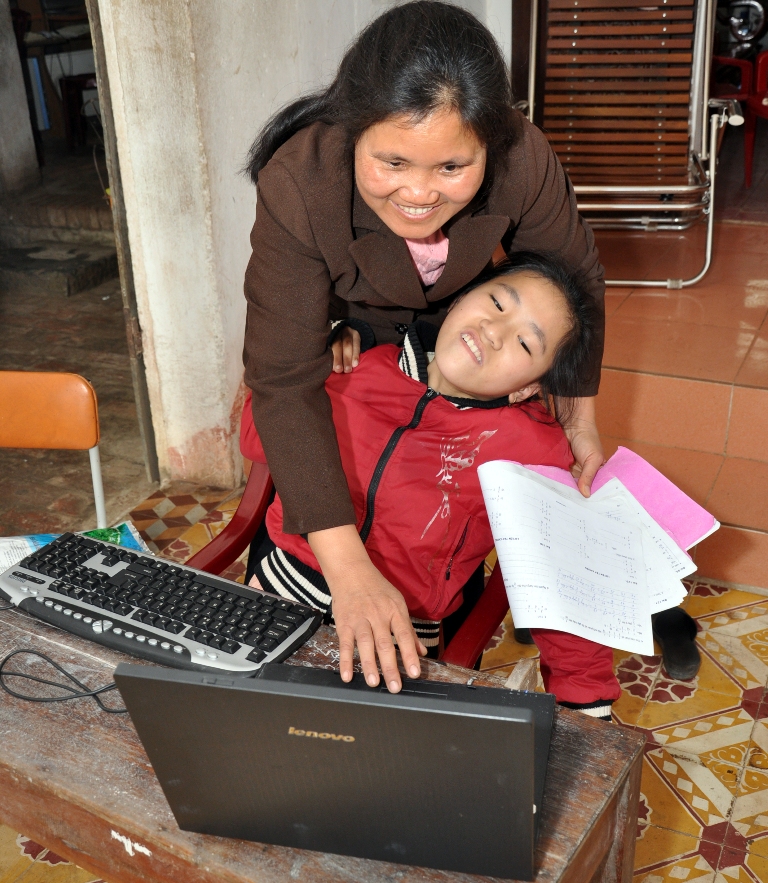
USAID assists persons with disabilities in Vietnam

Pham Thi Bich Ngoc's mother helps her set up her computer at home. With USAID support to parent associations, children with disabilities stay in school and enjoy being included in their communities.